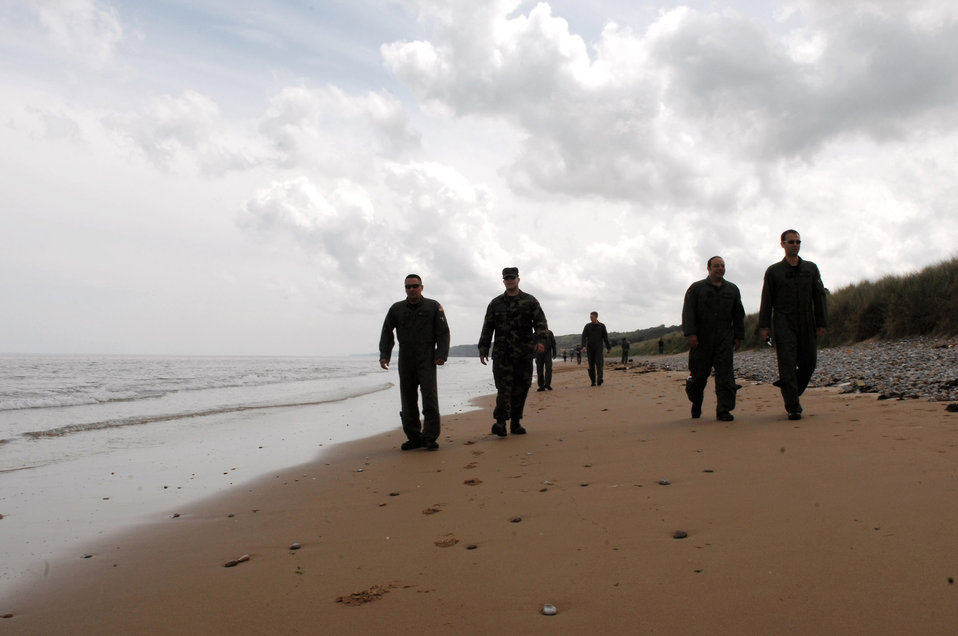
Remembering D-Day

Airmen walk along Omaha Beach as part of the weeklong commemoration of the D-Day invasion June 5 in Normandy, France. More than more than 9,000 allied soldiers were killed or wounded on this 50-mile stretch of beach, but it marked the beginning of the end of Nazi Germany during World War II.